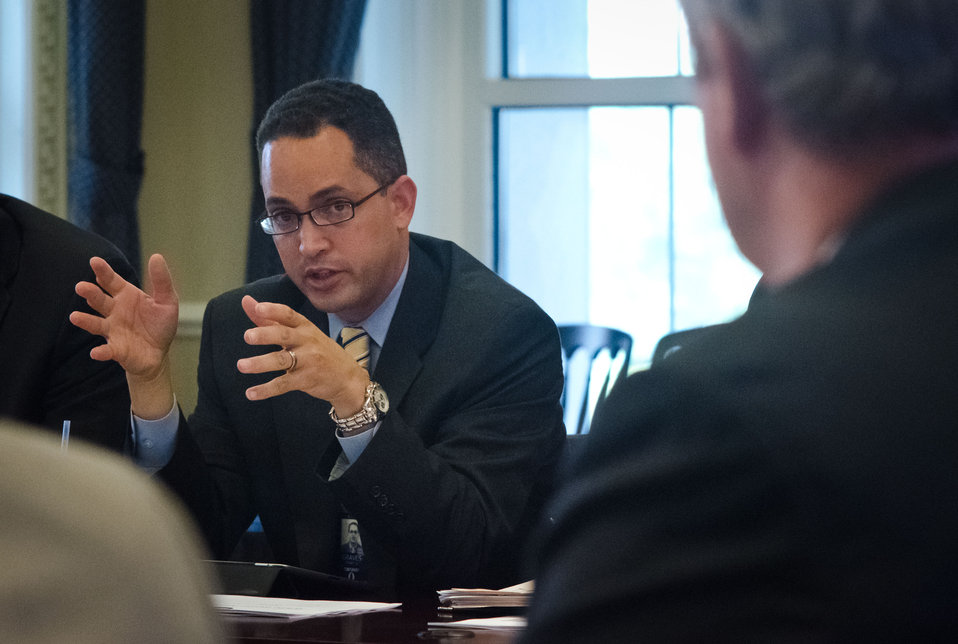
President’s Council on Jobs and Competitiveness Executive Director and U.S. Department of the Treasury Community Development and Housing Policy for Small Business Deputy Assistant Secretary Don Graves speaks during the White House Rural Council chaired by Agriculture Secretary Tom Vilsack at the White House, in Washington, D.C. on Friday, Oct. 5, 2012. The White House Rural Council discusses recent White House announcements and Secretary Vilsack asked council members to outline their work plan for the coming months.